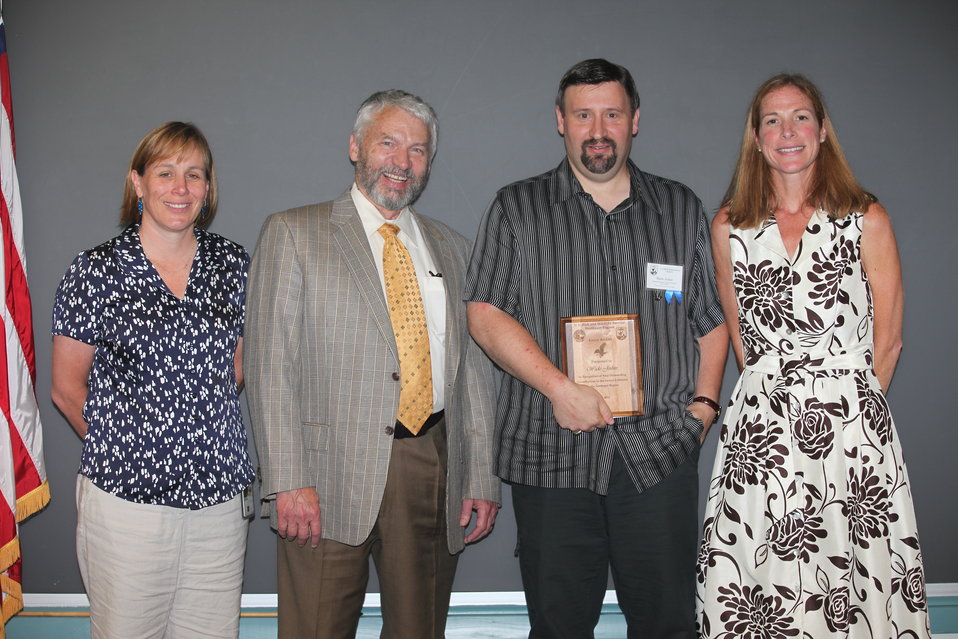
Wade Jodun of Fisheries recieved the Eagle Award.
From left to right: Deputy Regional Director Deb Rocque, Deputy Director Rowan Gould, Wade Jodun, and Regional Director Wendi Weber